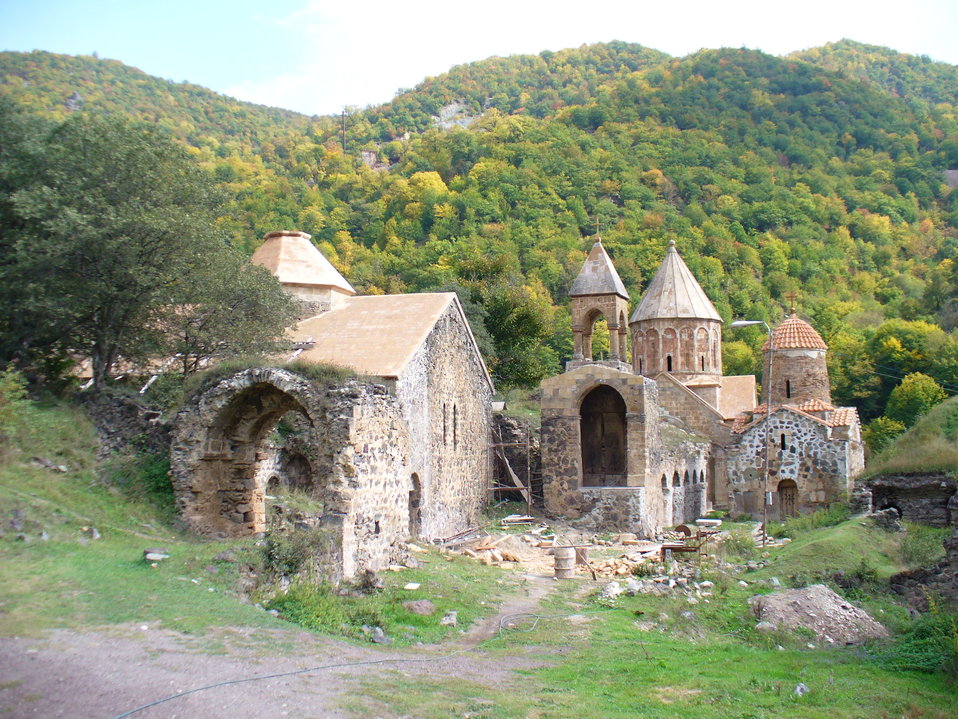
Русский: Монастырь Дадиванк Dadivank Monastery